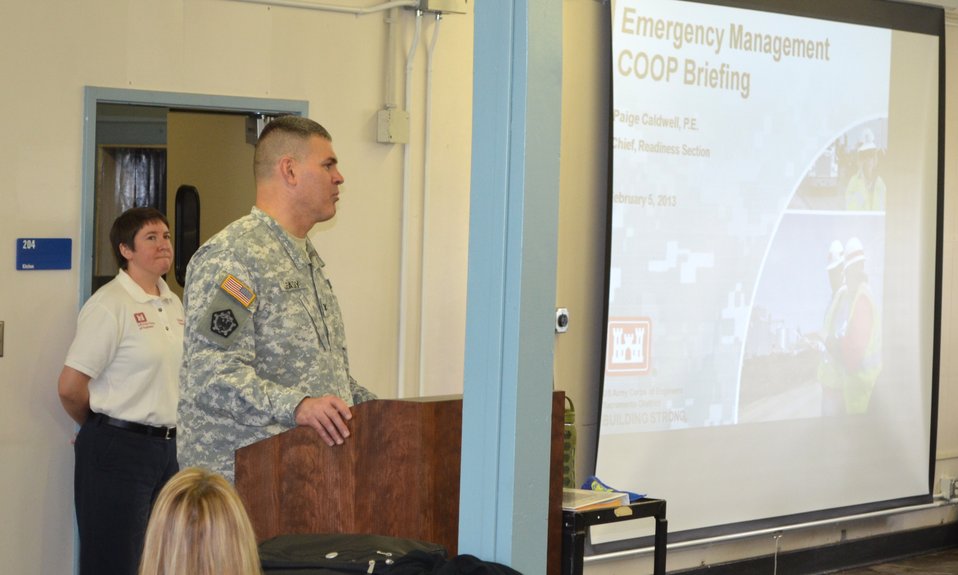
Corps conducts emergency operations training

Col. Bill Leady, commander of the U.S. Army Corps of Engineers Sacramento District, speaks to district staff during a Continuity of Operations Planning exercise Feb. 5, 2013, near Sacramento, Calif. The exercise provided district employees an opportunity to evaluate and improve emergency response plans, and ensure the Corps can continue providing essential services to the public during a disaster. Each year, the Corps deploys hundreds of employees to respond to disasters around the world; sustaining lives with critical commodities; providing technical expertise; and assessing and restoring critical infrastructure.